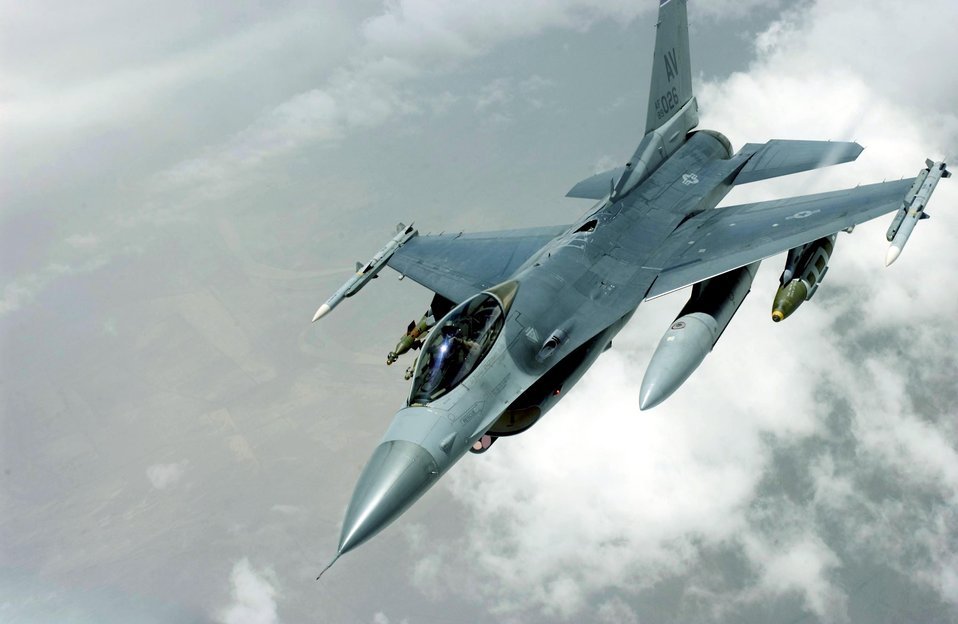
Triple nickel falcon

OVER IRAQ - After refueling, an F-16 Fighting Falcon pilot from the 555th Fighter Squadron at Aviano Air Base, Italy, peels away from a KC-135 Stratotanker from the 92nd Air Refueling Squadron at Fairchild Air Force Base, Wash.